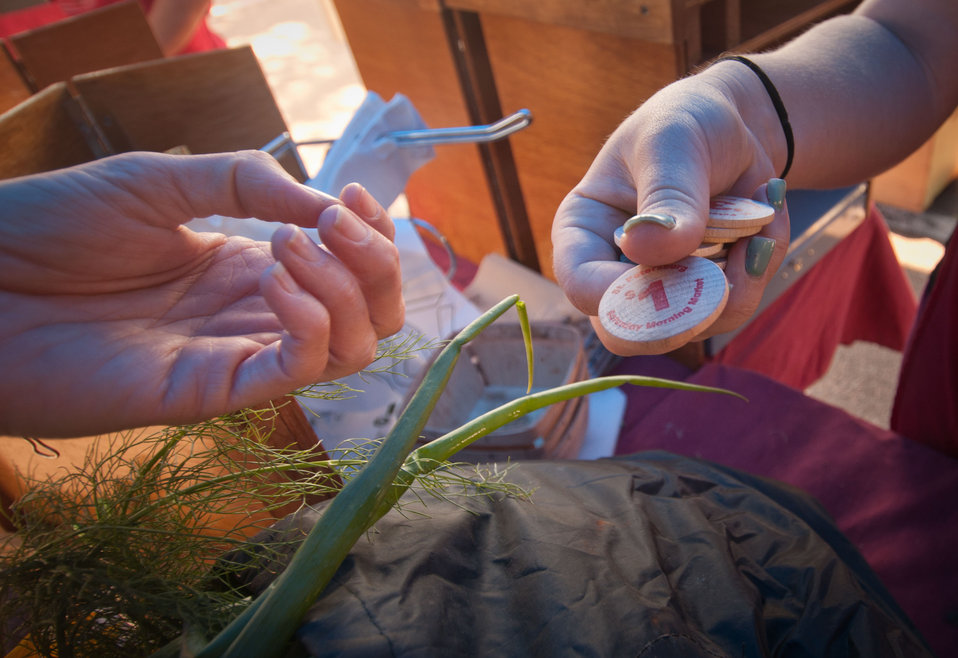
Joney O'Hare, left, uses Saturday Morning Market tokens to pay for some of her purchases funded by her U.S. Department of Agriculture (USDA) Supplemental Nutrition Assistance Program (SNAP) benefits at the Saturday Morning Market, in St. Petersburg, FL on April 14, 2012. Worden Farm (www.wordenfarm.com) says, “We at Worden Farm are happy to work with the USDA SNAP. The tokens are exchanged with vendors for food, food producing plants or seeds. Vendors return the tokens to the market organizer for an equal dollar amount that is electronically deposited into the vendor’s bank account. Worden Farm is a family farm that provides certified organic produce to Southwest Florida through community supported agriculture (CSA) membership programs and retail sale at several farmer’s (community) markets. Depending on the state, EBT cards can also hold value from other food and nutrition partners that can add a certain value or provide a certain degree of match to the value of other programs add to the card.